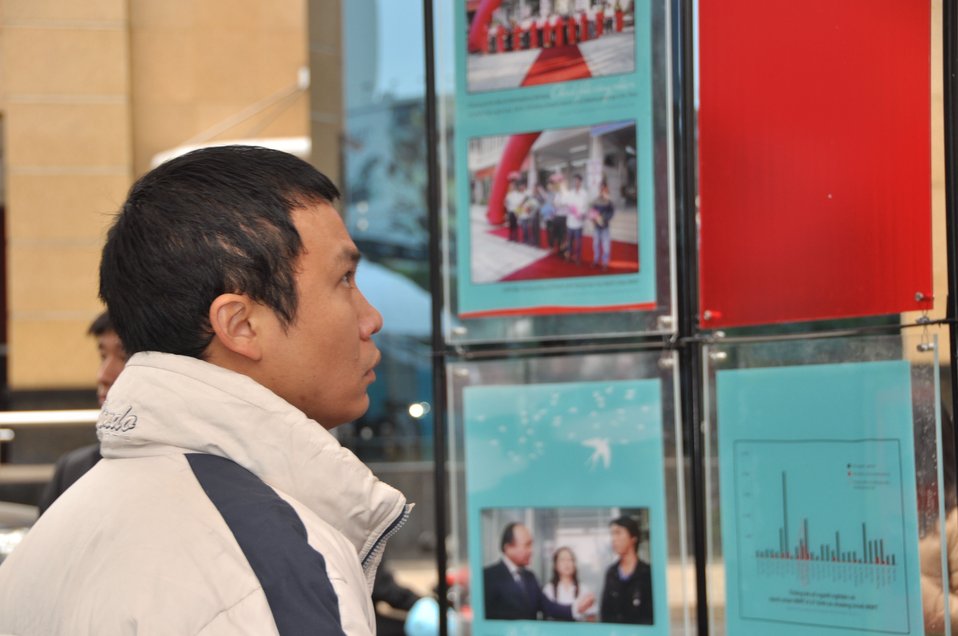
Photo Exhibition Launch

USAID/Vietnam